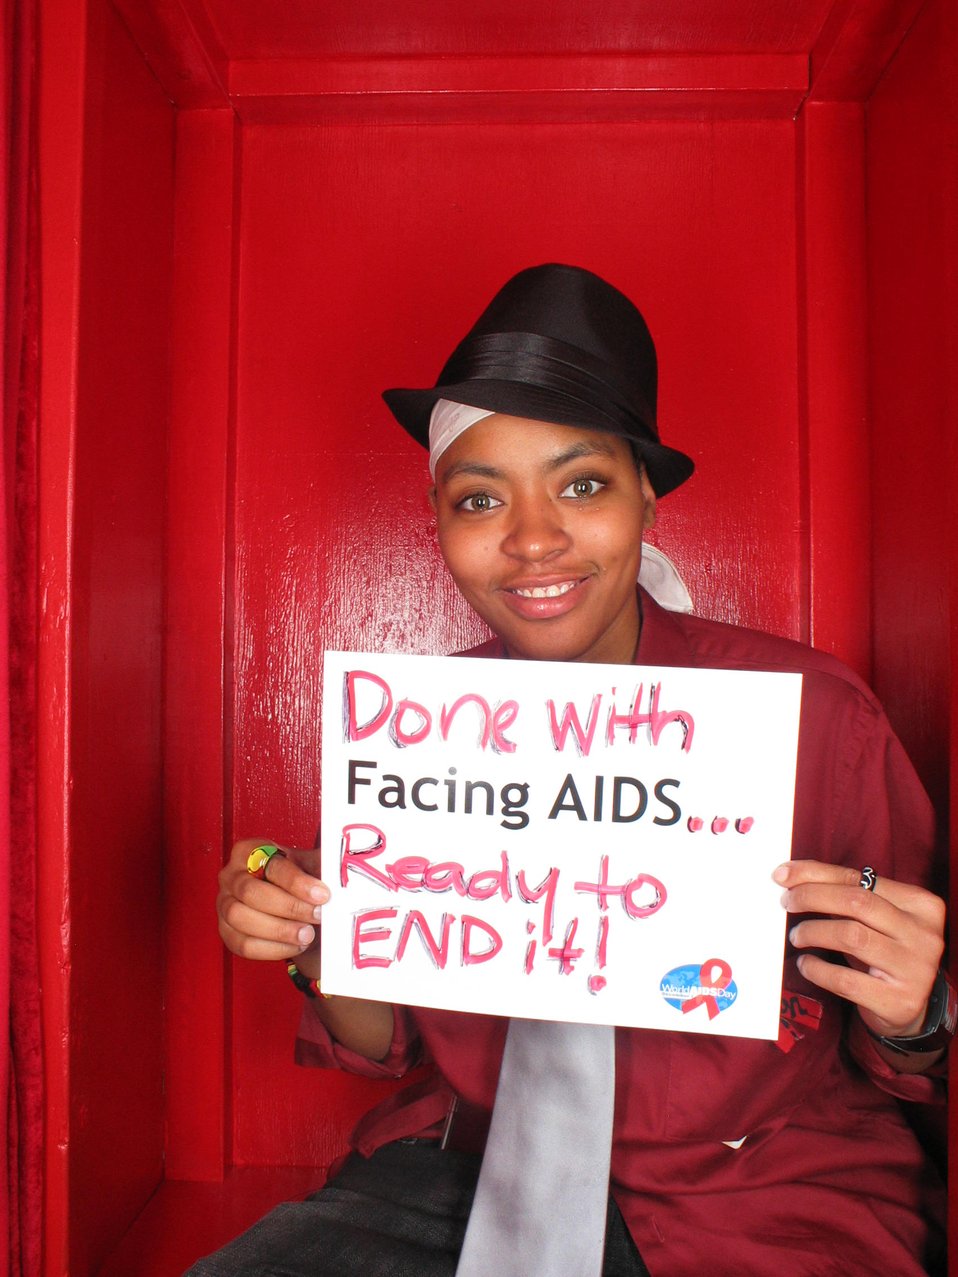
Done with Facing AIDS...ready to end it!